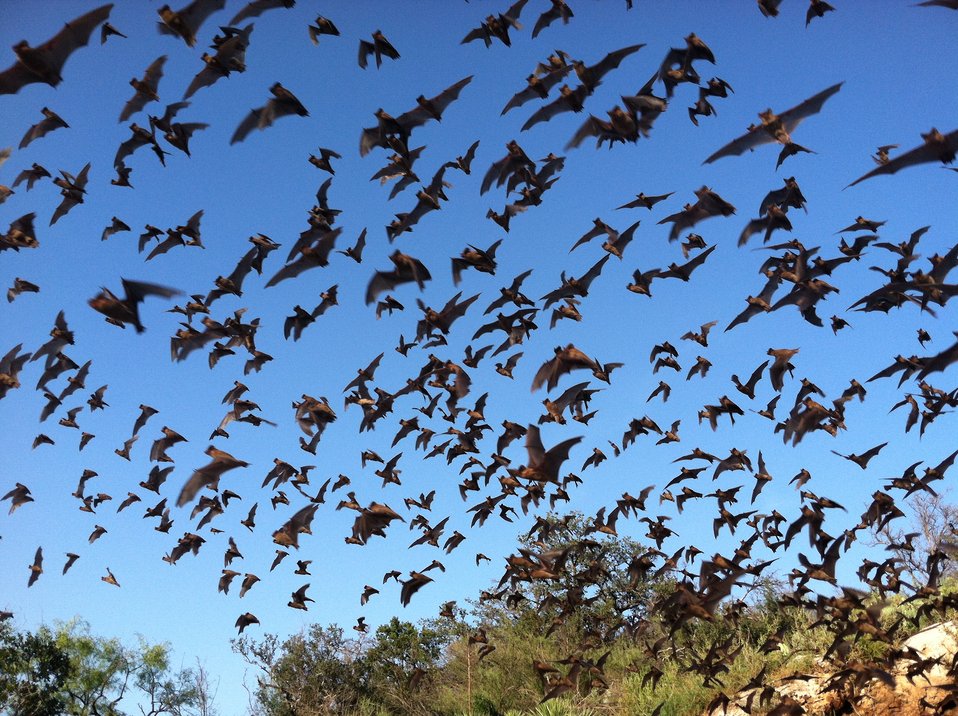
Mexican free-tailed bats